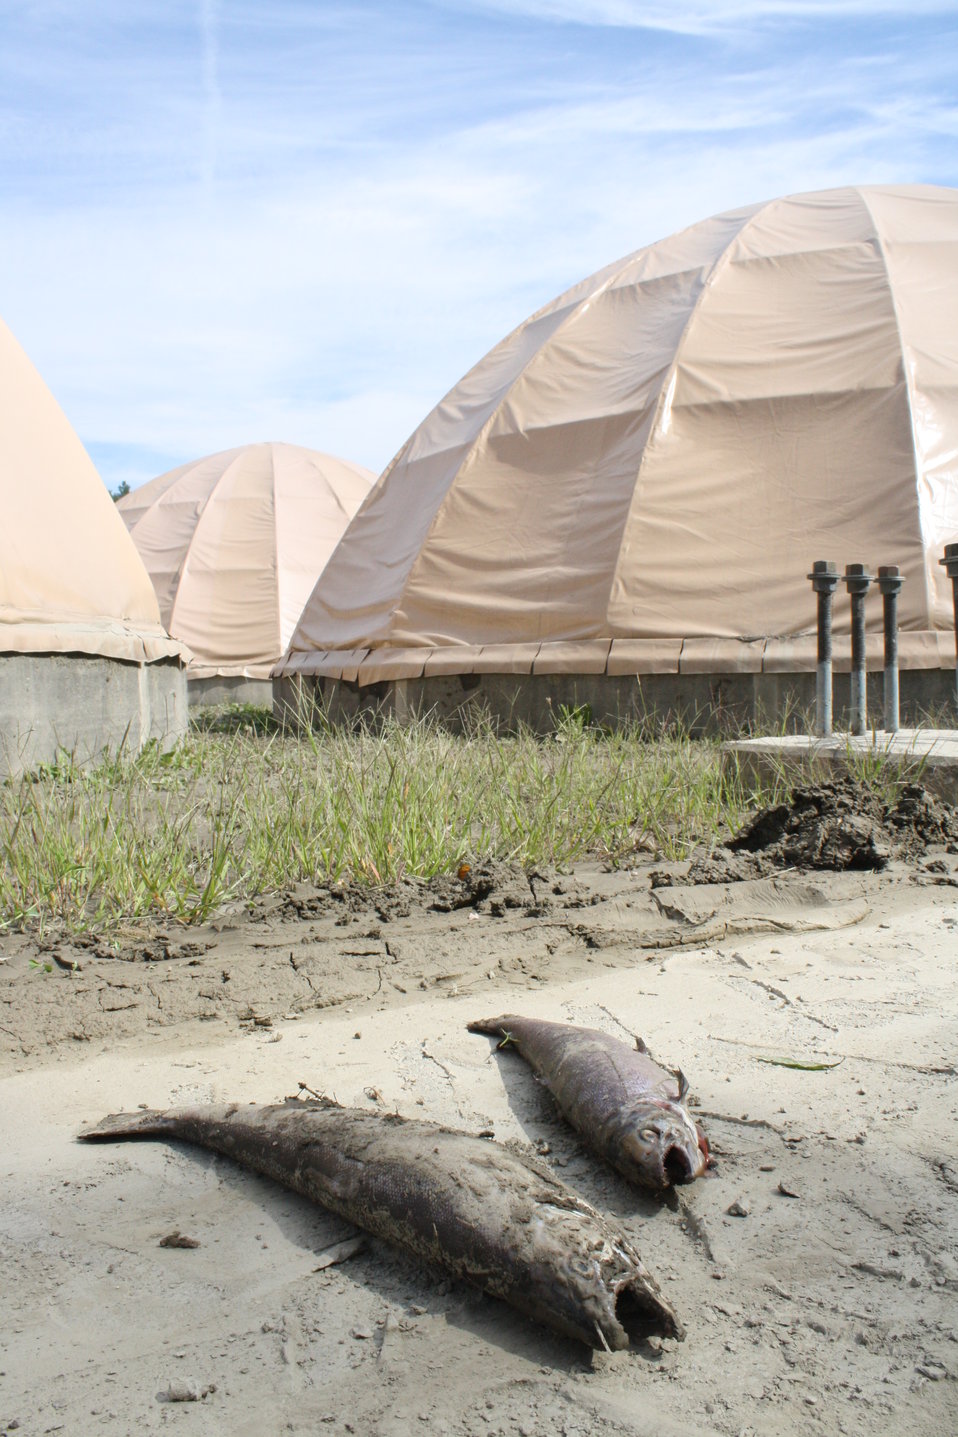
Dead fish, sediment after Hurricane Irene flood event

High flood waters breached some circular fish rearing pools at White River National Fish Hatchery during Hurricane Irene. Some fish escaped, and were left stranded by receding flood waters.

Significant amounts of river sediment were deposited on White River National Fish Hatchery grounds.